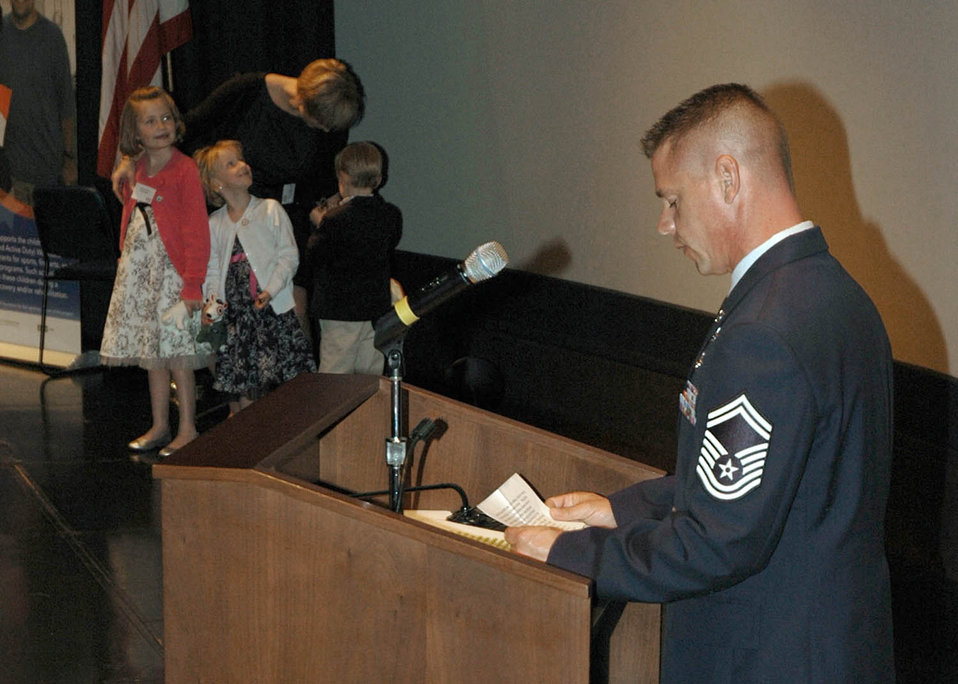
Organization honors service members' children

Senior Master Sgt. William Liston addresses the audience on behalf of his family at the Our Military Kids of the Year awards ceremony April 14, 2011, at the Navy Memorial in Washington. Sergeant Liston and his family were honored as the Our Military Kids Family of the Year. Our Military Kids is a nonprofit organization that provides artistic, athletic and educational grants to children of deployed National Guardsmen and military reservists.